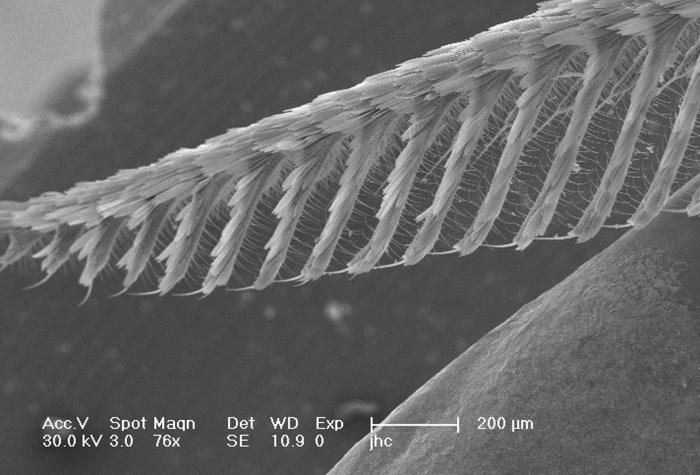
Under a relatively low magnification of 76X, this scanning electron micrograph (SEM) revealed some of the ultrastructural morphology located on the head region of an unidentified white moth, which had been found deceased on the ground in the suburbs of Decatur, Georgia. In this particular view, the feather-like structure of the moth's antenna was made more evident in this sensorial organ, made even more sensitive by the increase in its surface area due to the presence of a scalar surface. You'll also note the presence of small 'setae' or 'hairs', which add further to the antenna's sensitivity.